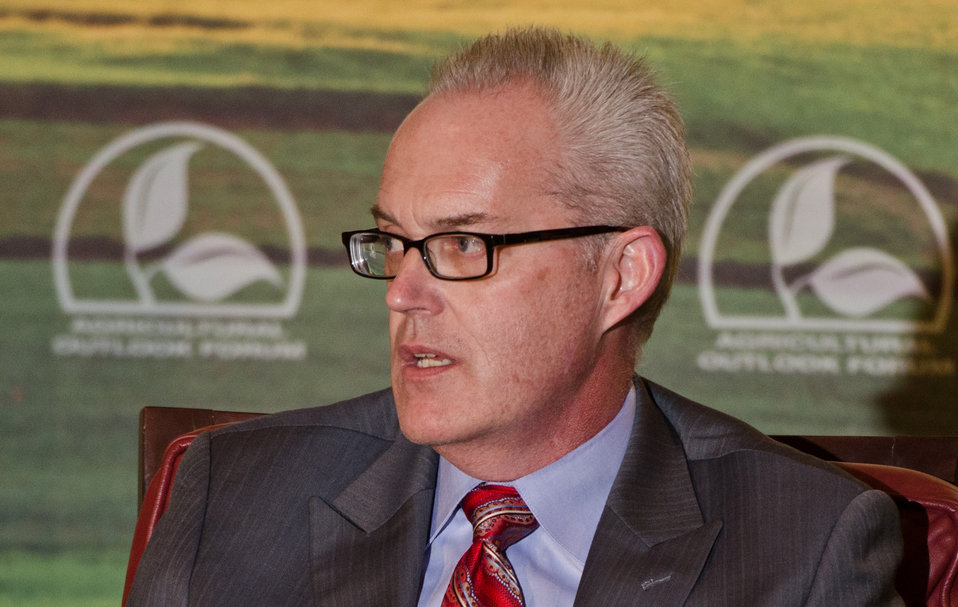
CME Group Chief Operating Officer Bryan T. Durkin responds to a question during the 'Plenary Panel: Managing Risks in Today's Markets' of the 2013 Agricultural Outlook Forum, held at the Crystal Gateway Marriott Hotel, Arlington, Virginia on Thursday, Feb. 21, 2013. This annual Forum brings together producers, policymakers, and business, government, and industry leaders to meet, exchange ideas, and discuss timely agriculture issues.